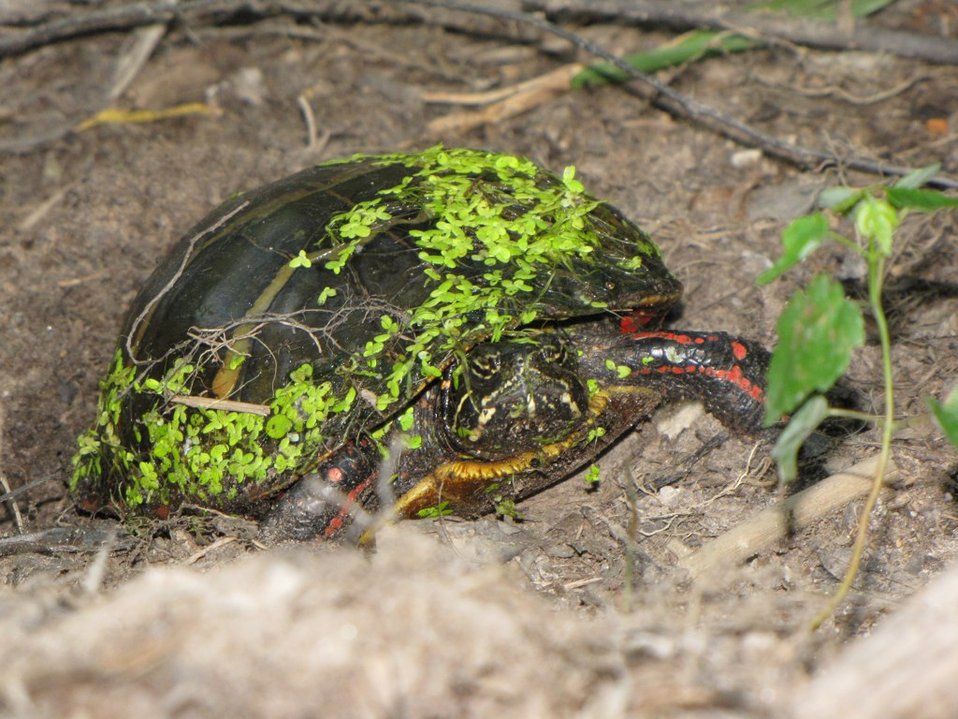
Mattaponi Wildlife Management Area, Virginia

Survey (June 27 - 28, 2012)

Female eastern painted turtle (Chrysemys picta picta).